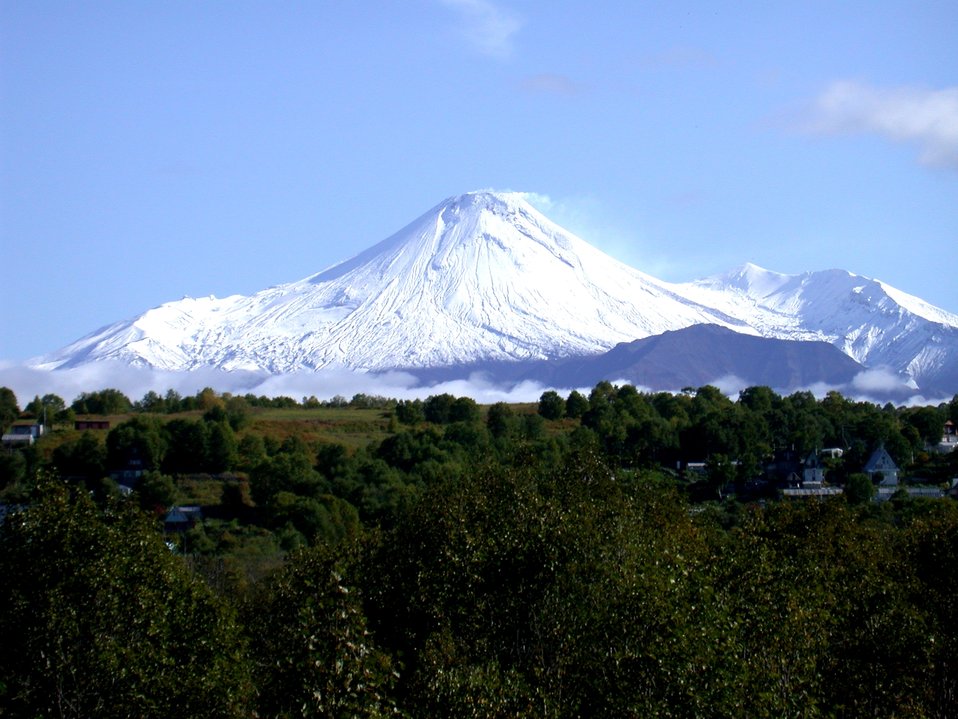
Volcanoes on the Kamchatka Peninsula.